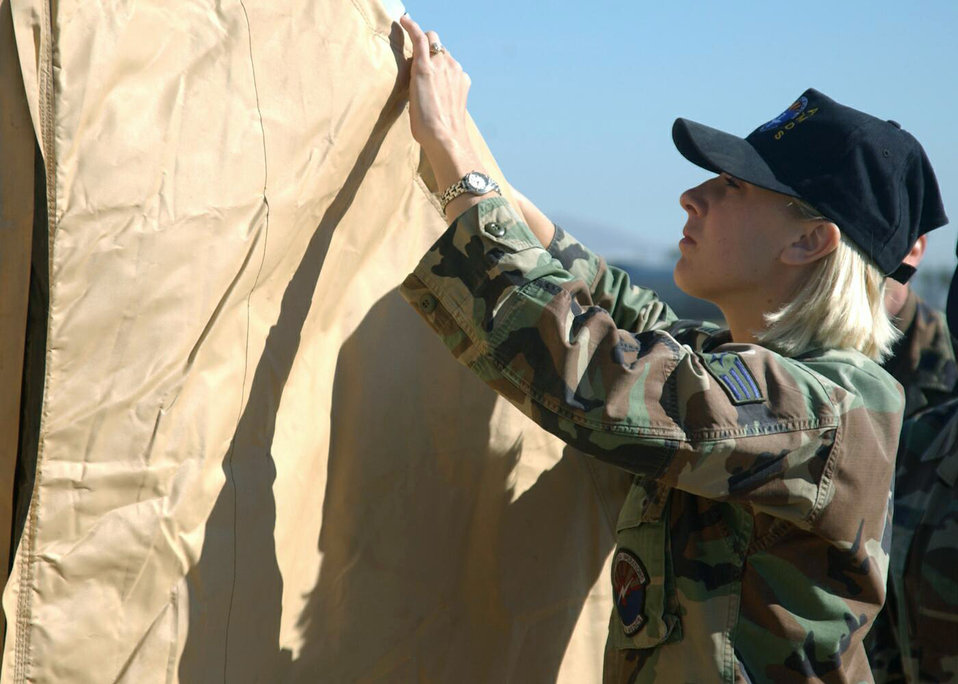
A tents situation

DAVIS-MONTHAN AIR FORCE BASE, Ariz. -- Senior Airman Mindy Ritenour helps erect an Alaskan shelter that is used for patient care at deployed locations. Airmen train like this quarterly to prepare for deployment. Airman Ritenour is a medical technician assigned to the 355th Medical Support Squadron.